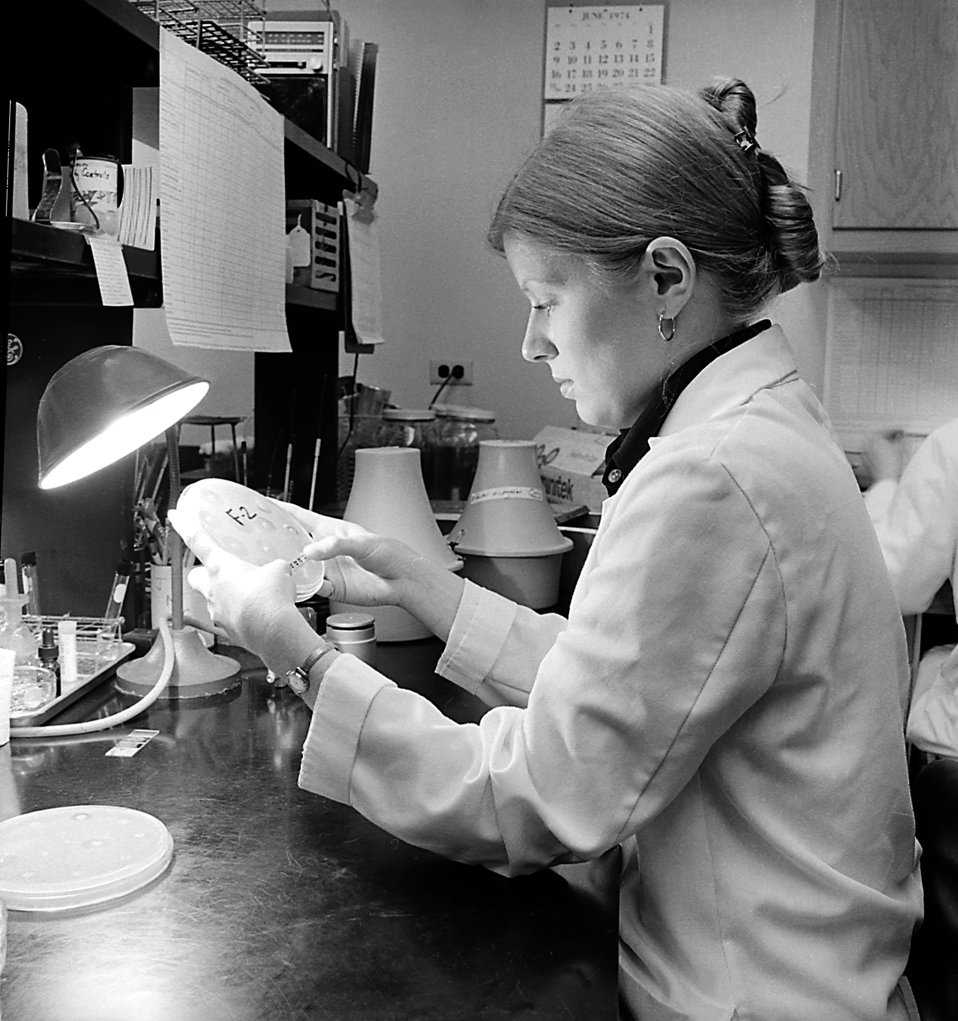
A laboratorian in a bacteriology lab is examining a Petri dish culture.